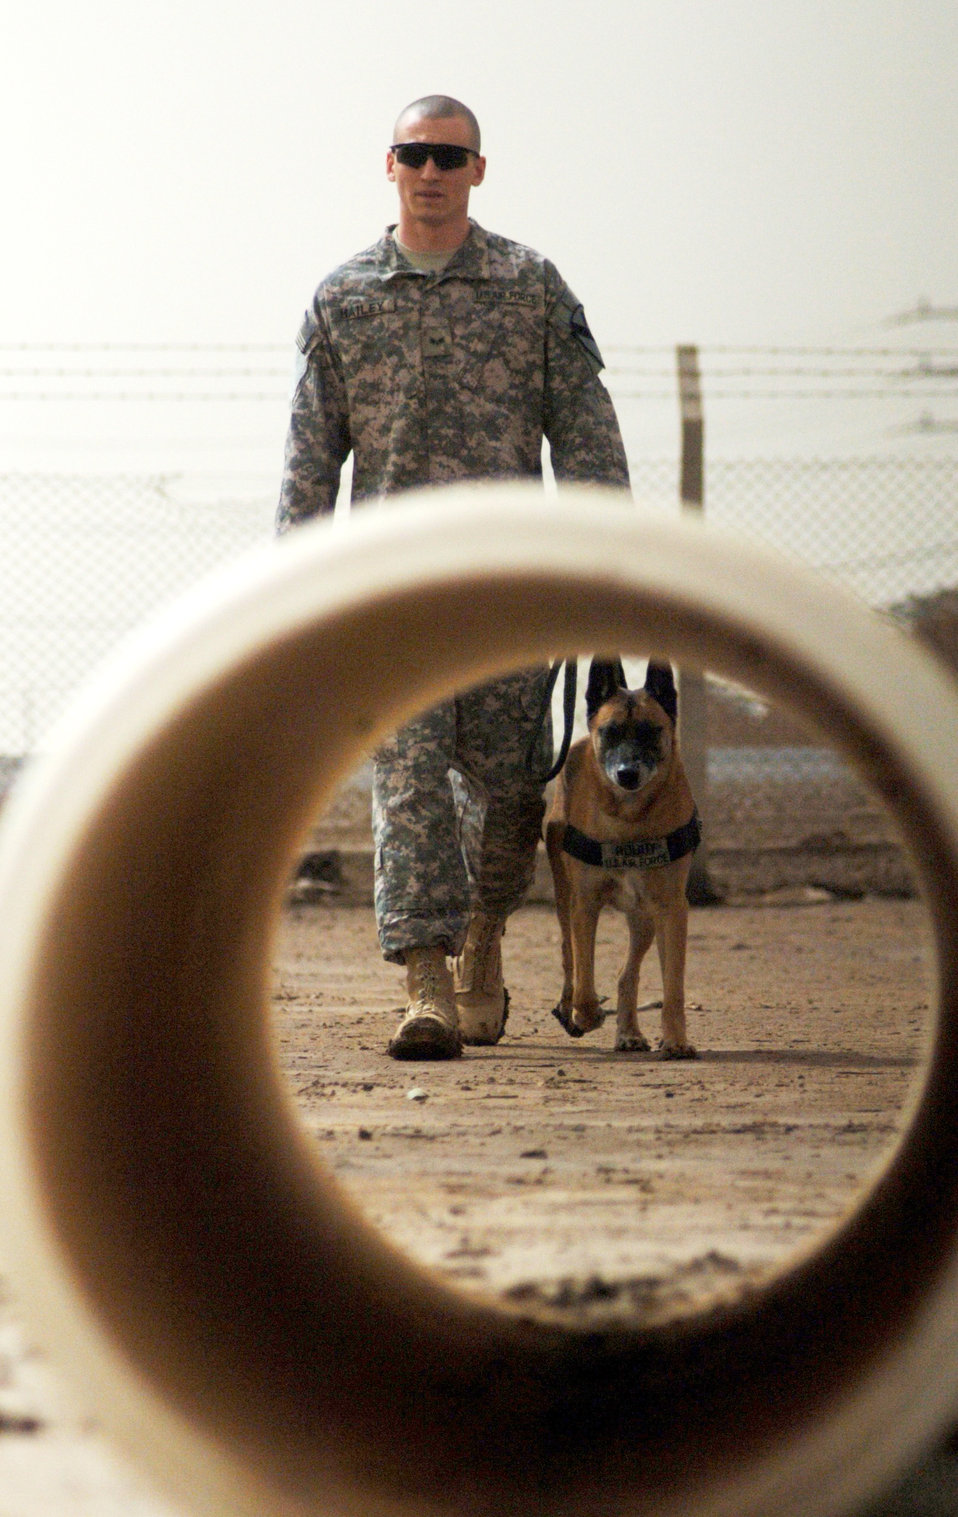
K-9, handler work together to keep servicemembers safe

Senior Airman William Bailey prepares to let Robby, his nine-year-old Belgian Malinois, complete an obstacle as part of their daily training at Camp Taji, Iraq. Airman Bailey is a military working dog handler attached to the Army's 1st Calvary Division.